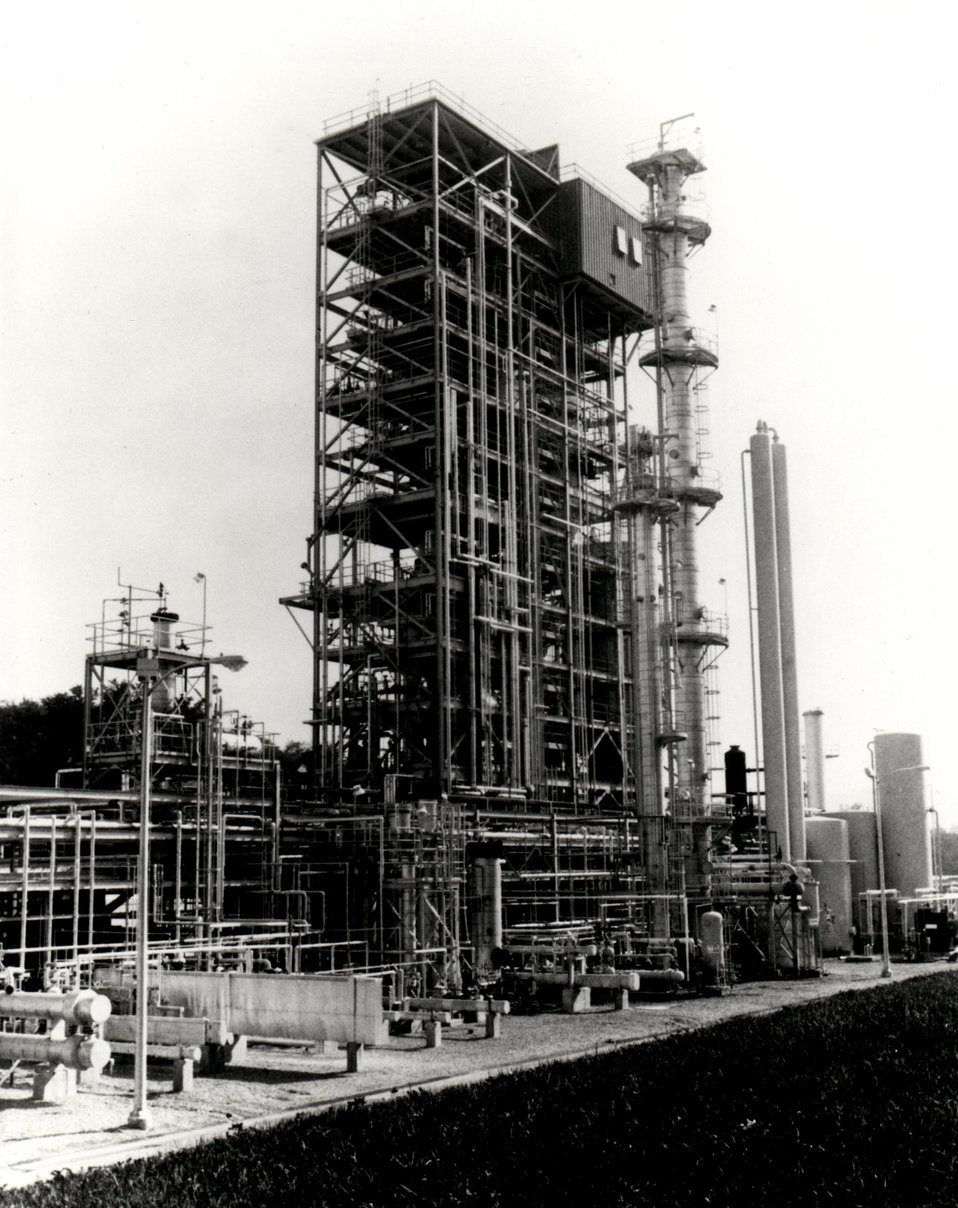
A new process for converting coal to synthetic natural gas is underway at the U.S. Department of Energy's SYNTHANE coal gasification pilot plant at Bruceton, Pennsylvania, near Pittsburgh. Circa 1976.